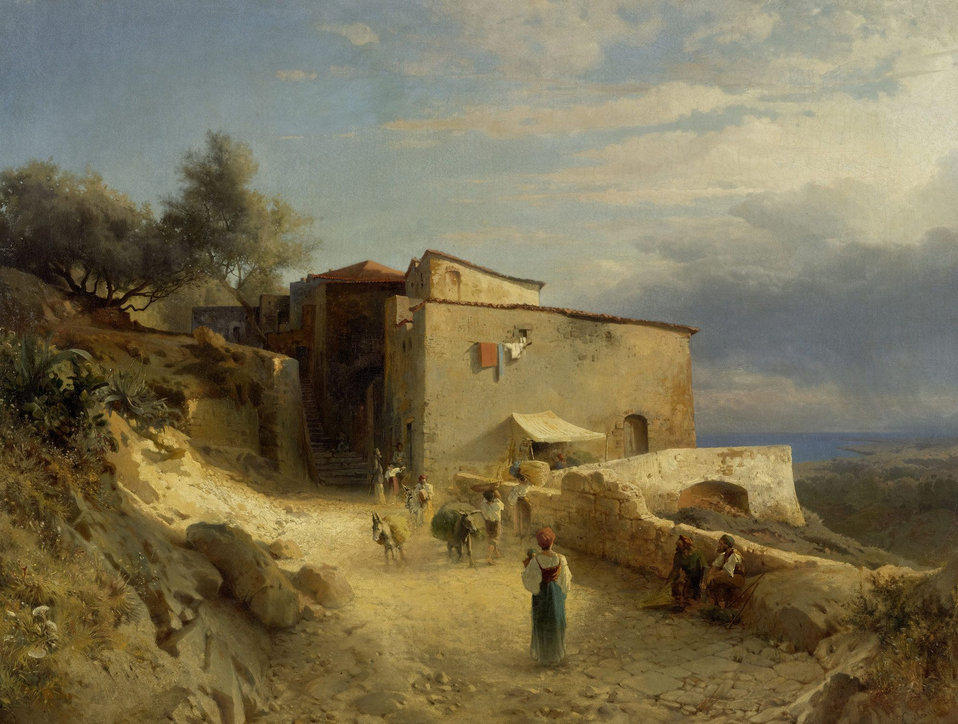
Italienisches Küstendorf. Öl auf Leinwand. Unten rechts signiert: A. Calame f. 61 x 82 cm.